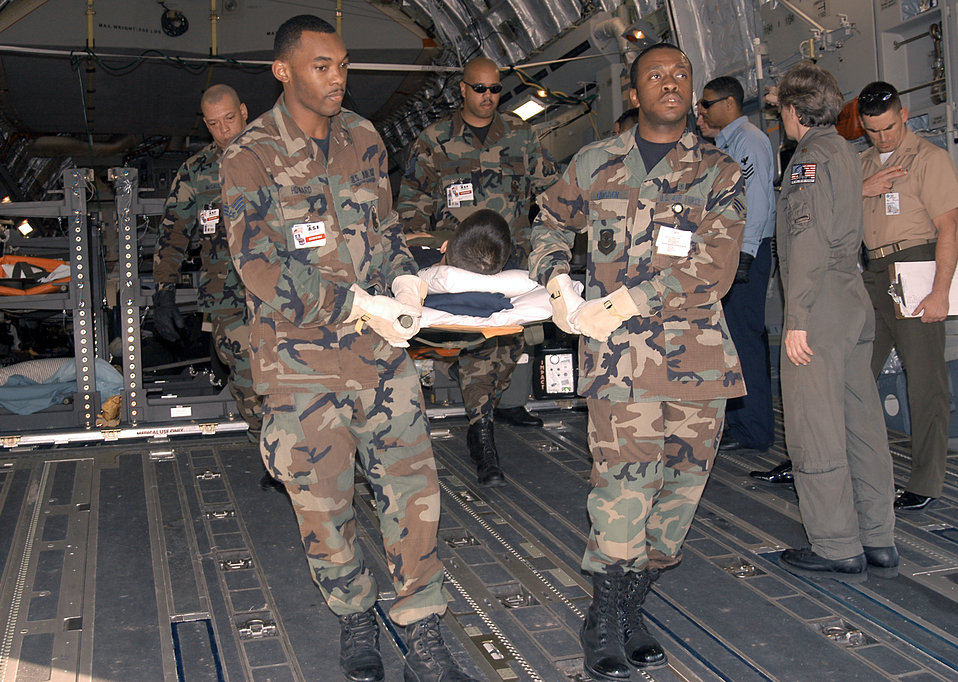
Careful transport

ANDREWS AIR FORCE BASE, Md. -- Medics from the 459th Aeromedical Evacuation Squadron carry an injured military member from a C-17 Globemaster III aircraft to an awaiting medical evacuation bus.